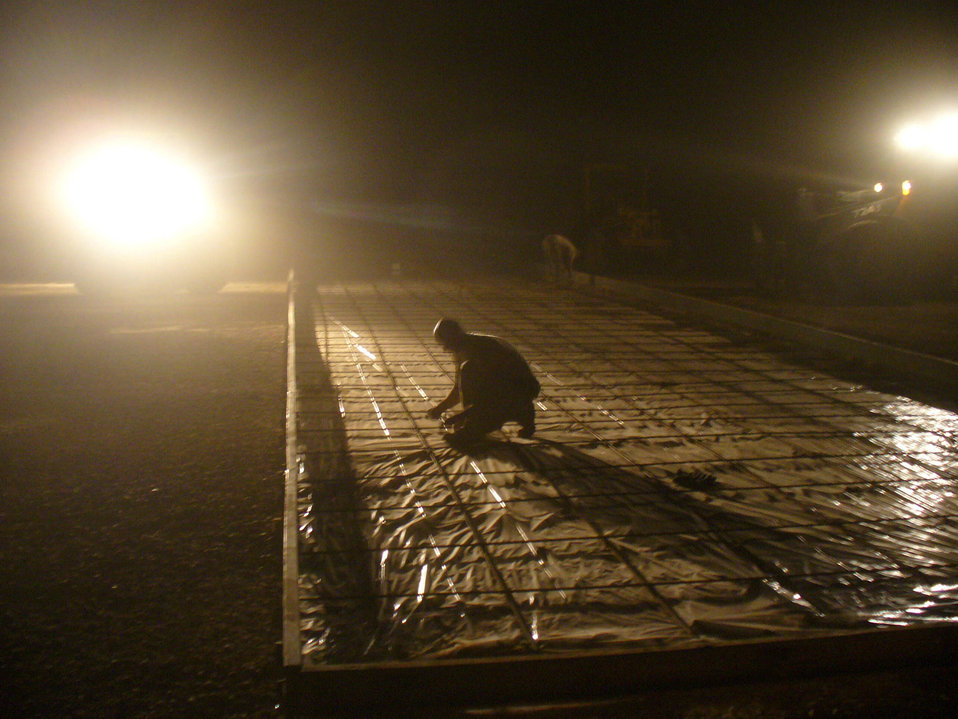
CE Airmen complete projects to benefit U.S., Iraqi army

Tech. Sgt. Chris Moffett ties down rebar under equipment lights during a nighttime dust storm at Forward Operating Base Caldwell, Iraq. The Airmen worked in shifts in order to finish the project at FOB Caldwell in minimal time. The concrete pads allow Soldiers a place to work on their vehicles without having to be in the dirt and mud. Sergeant Moffett is a heavy equipment operator with the 732nd Expeditionary Civil Engineer Squadron.